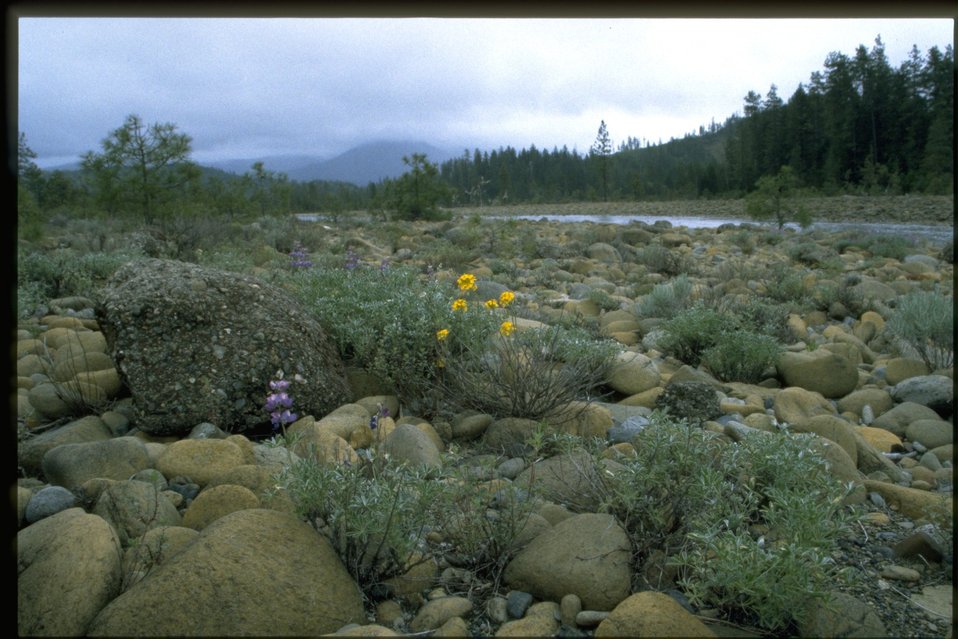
View of river and Lupine wildflowers from Rough & Ready.